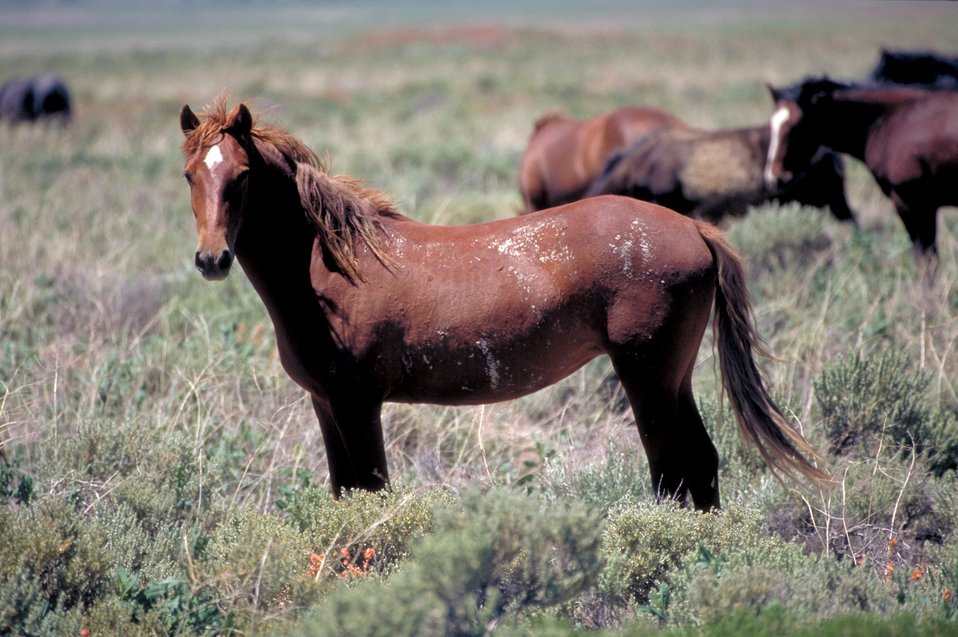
Onaqui Herd near Dugway, Utah.